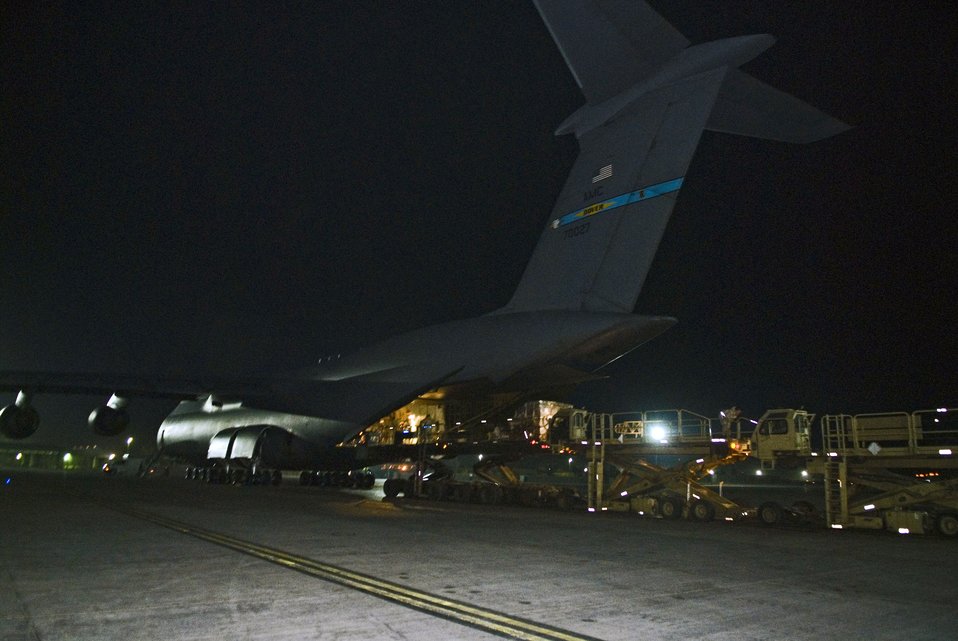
Galaxy quest

A C-5 Galaxy is downloaded Jan. 7 at Balad Air Base, Iraq. The C-5 can hold a cargo load of 270,000 pounds, fly 2,150 nautical miles, offload, and fly to a second base 500 nautical miles away from the original destination without refueling.